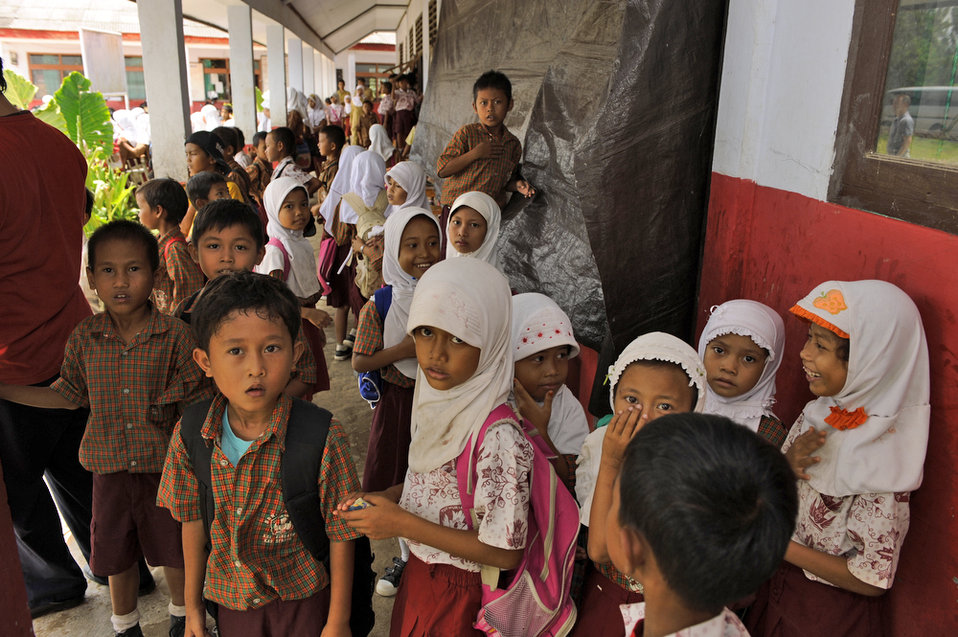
Cope West 2010

Indonesian children from a local elementary school greet Airmen from Yokota Air Base, Japan, as they arrive to donate more than 1,200 pounds of clothes, toys and sports equipment April 21, 2010, in Lanud Gorda Binuang, Indonesia.